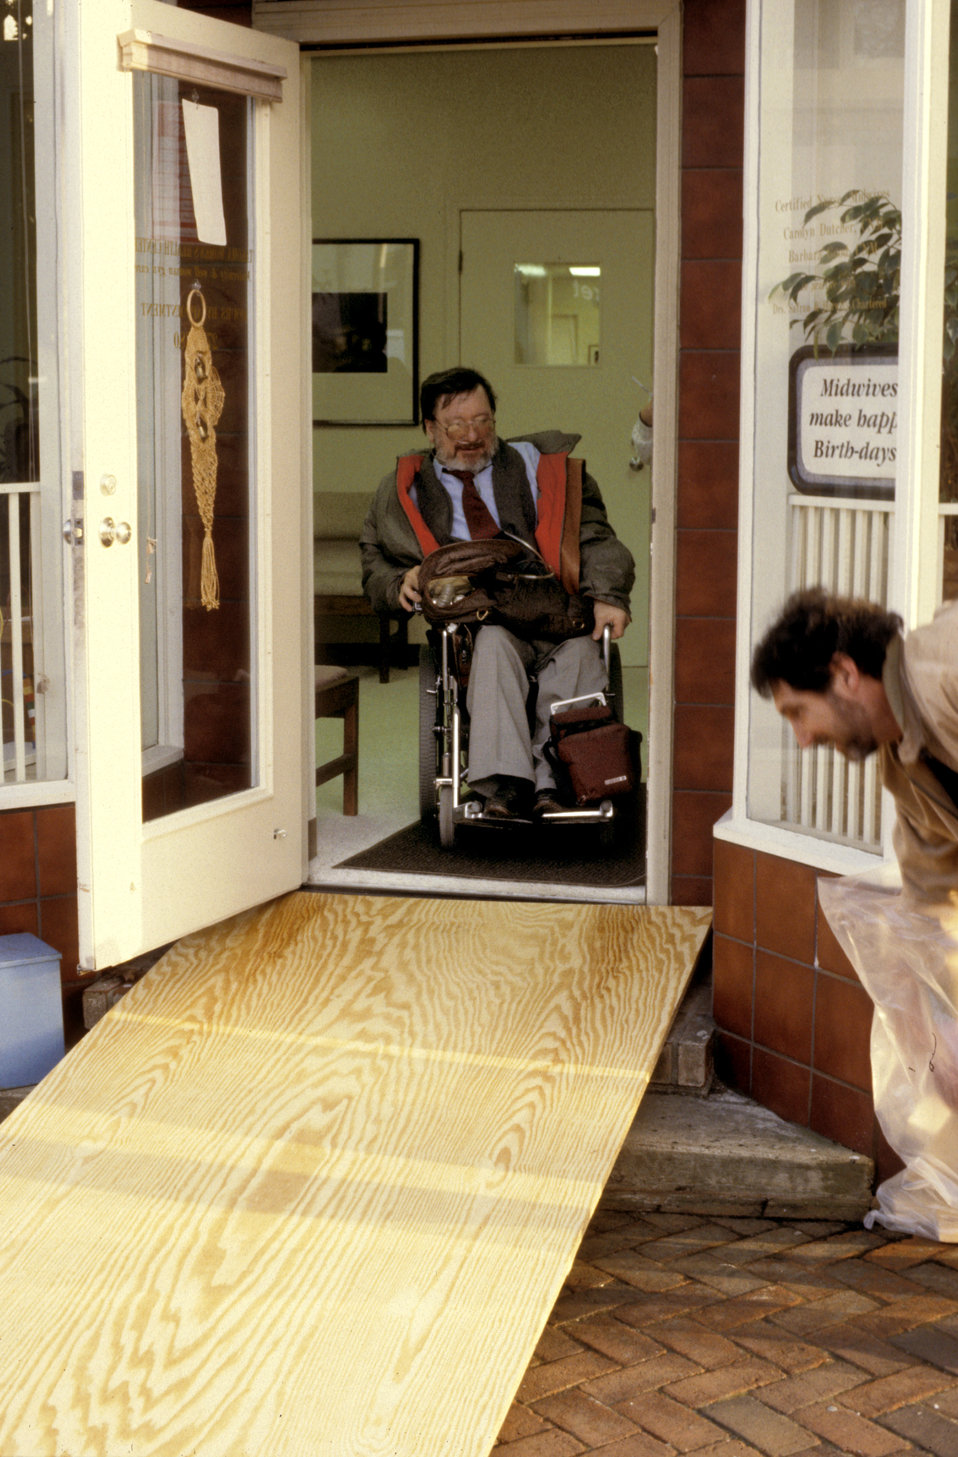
In this 1993 image, the front of a women's clinic revealed a front door that was accessed via a two-step stoop, which made accessibility an issue for the wheelchair-seated man shown here about to exit the premises. Visits by individuals having problems with mobility, prompted the installation of this temporary plywood ramp. Though the temporary ramp made access easier for the mobility-challenged, it was constructed in such a way as to make it a dangerous, though short-term solution (see PHIL 9022, 9023, 9025, 9026). PHIL image 9027 - 9029 depicted a long-term, permanent solution using a brick, concrete, and metal ramp. It was not the perfect solution, for it lacked adequate maneuvering room near the clinic doorway. It also clearly appeared as an add-on, or after-the-fact solution that protruded into the wide sidewalk, while attempting to blend in with the existing buildings by using brick, colored concrete, and wrought iron rails. Stairs had also been provided.